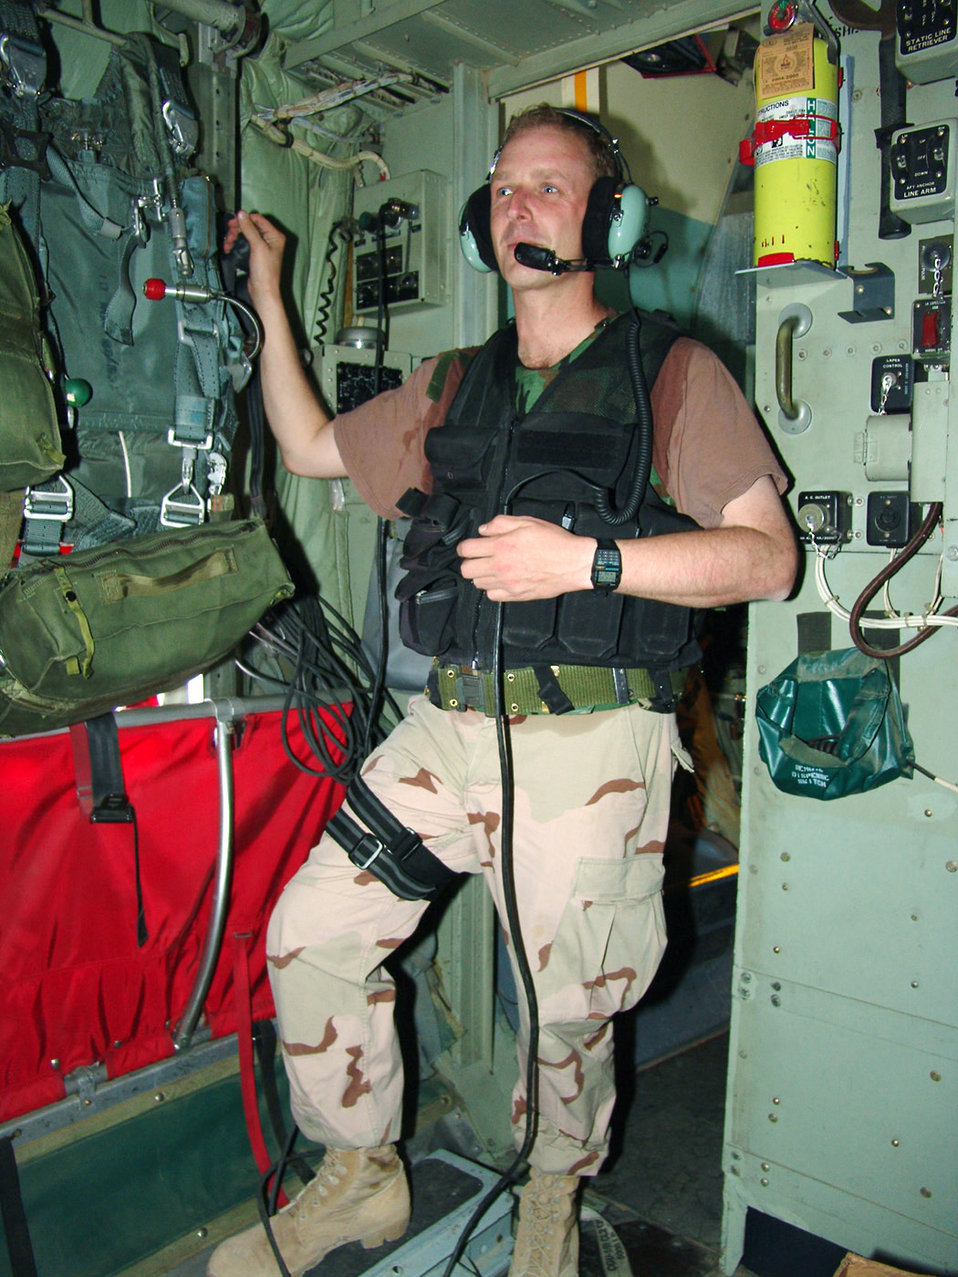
Fly away team

SOUTHWEST ASIA -- Tech. Sgt. Brian Mills provides flight deck denial security on a C-130 Hercules. He is assigned to the 386th Expeditionary Security Forces Squadron's fly away security team at a forward-deployed location.